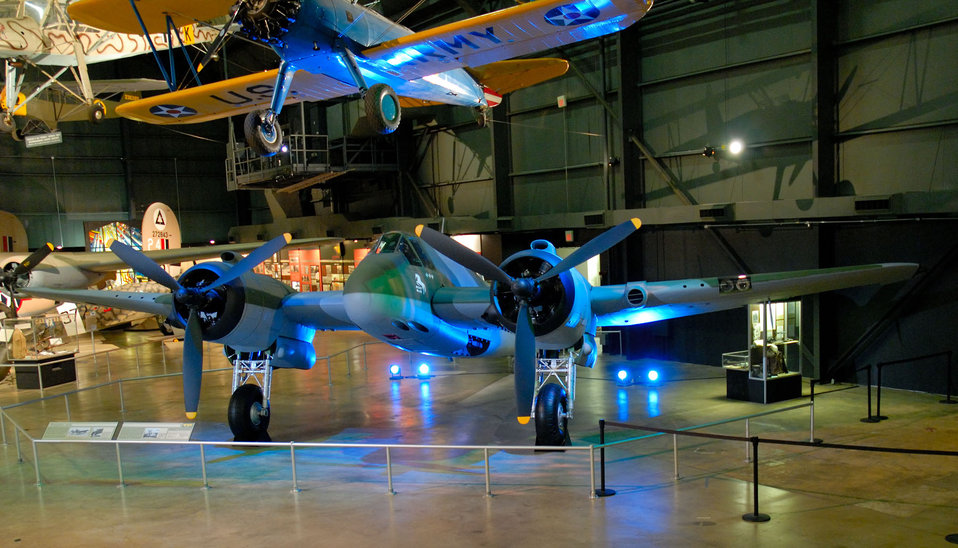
Museum adds Bristol Beaufighter to Air Power Gallery

A Bristol Beaufighter is the newest addition to the Air Power Gallery at the National Museum of the U.S. Air Force in Dayton, Ohio. .